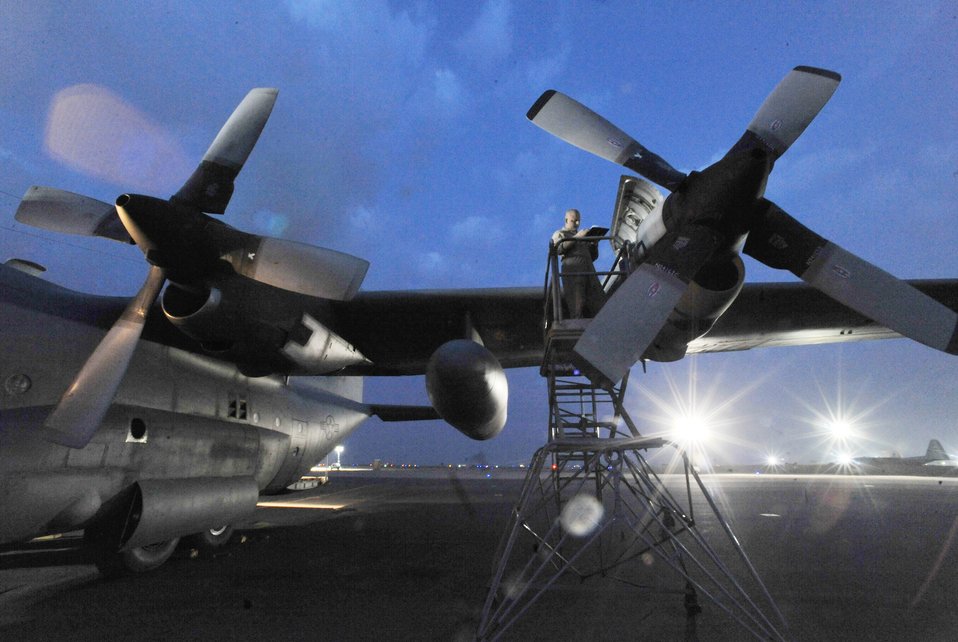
Night shift repair

Staff Sgt. Melvin Perry performs maintenance on a C-130 Hercules engine at an air base in Southwest Asia, March 27, 2010. Sergeant Perry is a flight engineer and deployed from the Air Force Reserve Command's 758th Airlift Squadron at Pittsburgh Air Reserve Station, Pa.